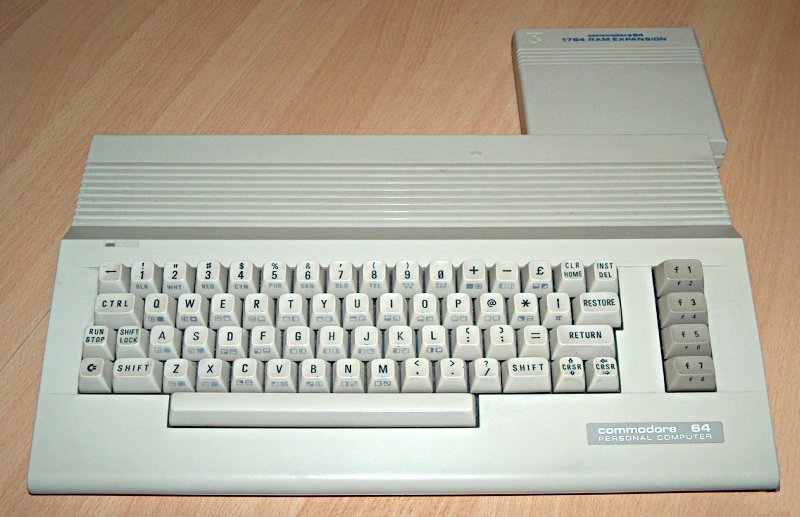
C64C